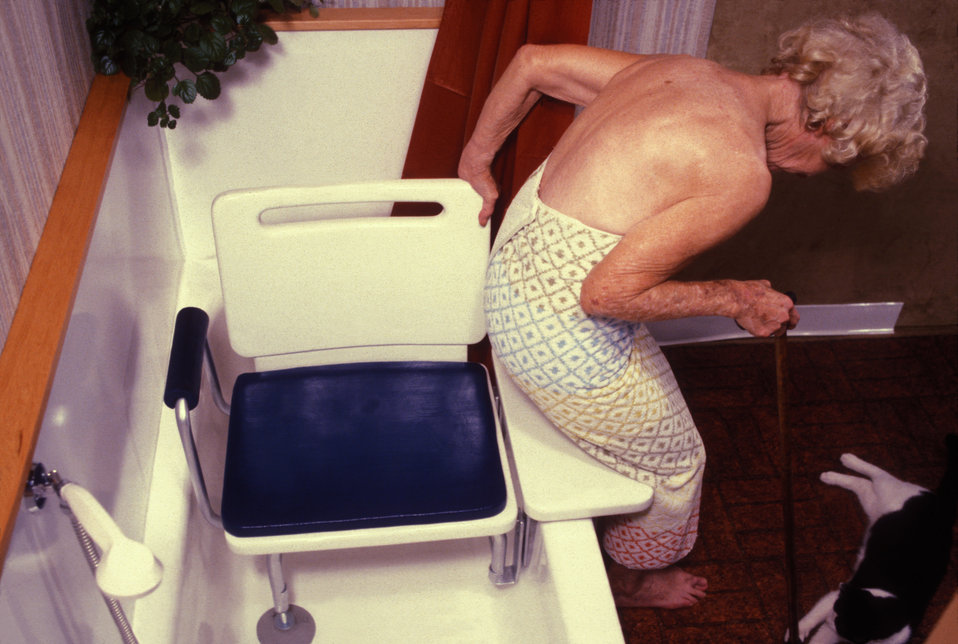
This was one of five images (PHIL# 9170 - 9174), depicting the action of two different mobility-challenged women getting into a bathtub by making use of an assistive in-tub seating apparatus. In this particular view, an elderly woman was either exiting, or entering the bath tub, while she was grasping the back support of the in-tub seat, as she was simultaneously using a walking cane for added stability. With back support and armrests, a bathtub seat could be clamped to the tub rim for stability, and acted as an effective, popular solution for many people with disabilities. These designs work best for those who could transfer from their mobility devices, or could walk, but have difficulty standing for extended periods of time because of balance, or stamina limitations.